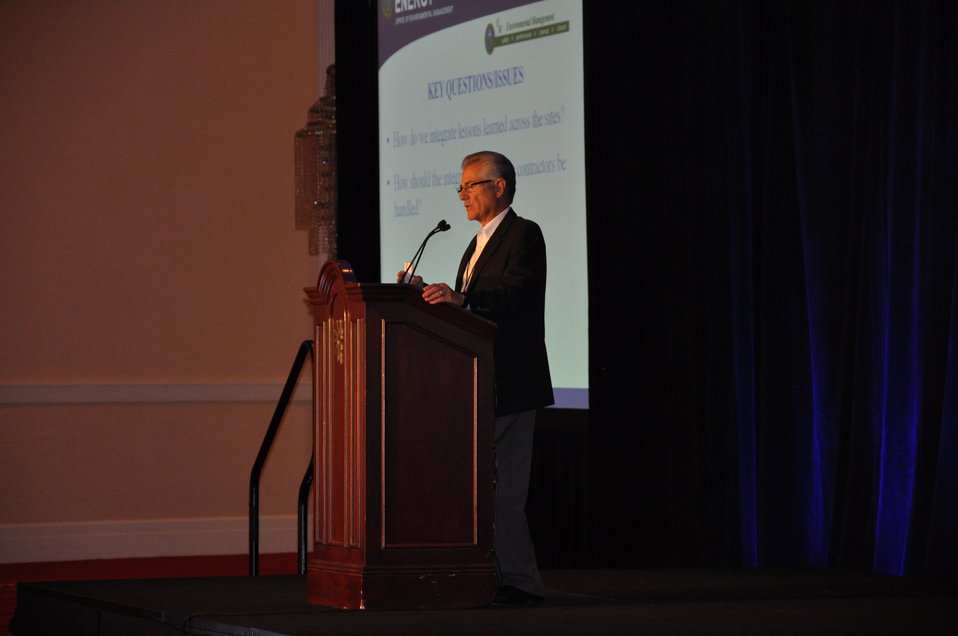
Workforce Transition Arises as Central Theme in Information Exchange

Len Martinez, a consultant to the EM Recovery Act Program, talks about workforce transition at the Information Exchange.